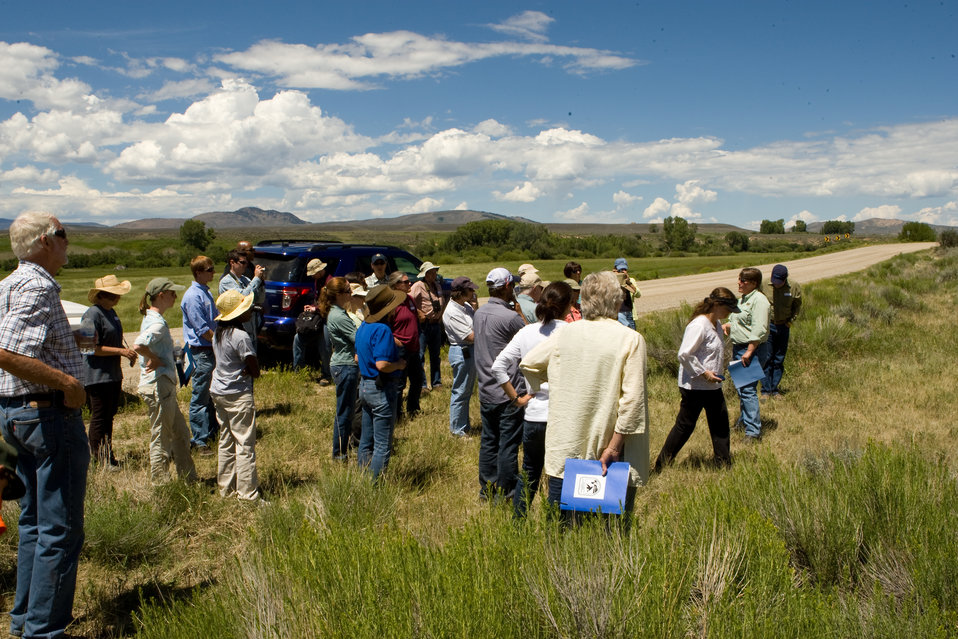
Colorado Rare Plant Conservation Initiative

The Colorado Rare Plant Conservation Initiative (RPCI) is a partnership of 23 statewide and regional agencies, private organizations, and academic institutions working to conserve 121 rare plants in Colorado. As part of these efforts the group developed the Colorado Rare Plant Conservation Strategy, developed Best Management Practices to reduce energy development impacts, addressed climate change, and developed focused strategies for the conservation of individual species at eight priority landscapes. The group has also worked to coordinate volunteer efforts for plant conservation across the state.